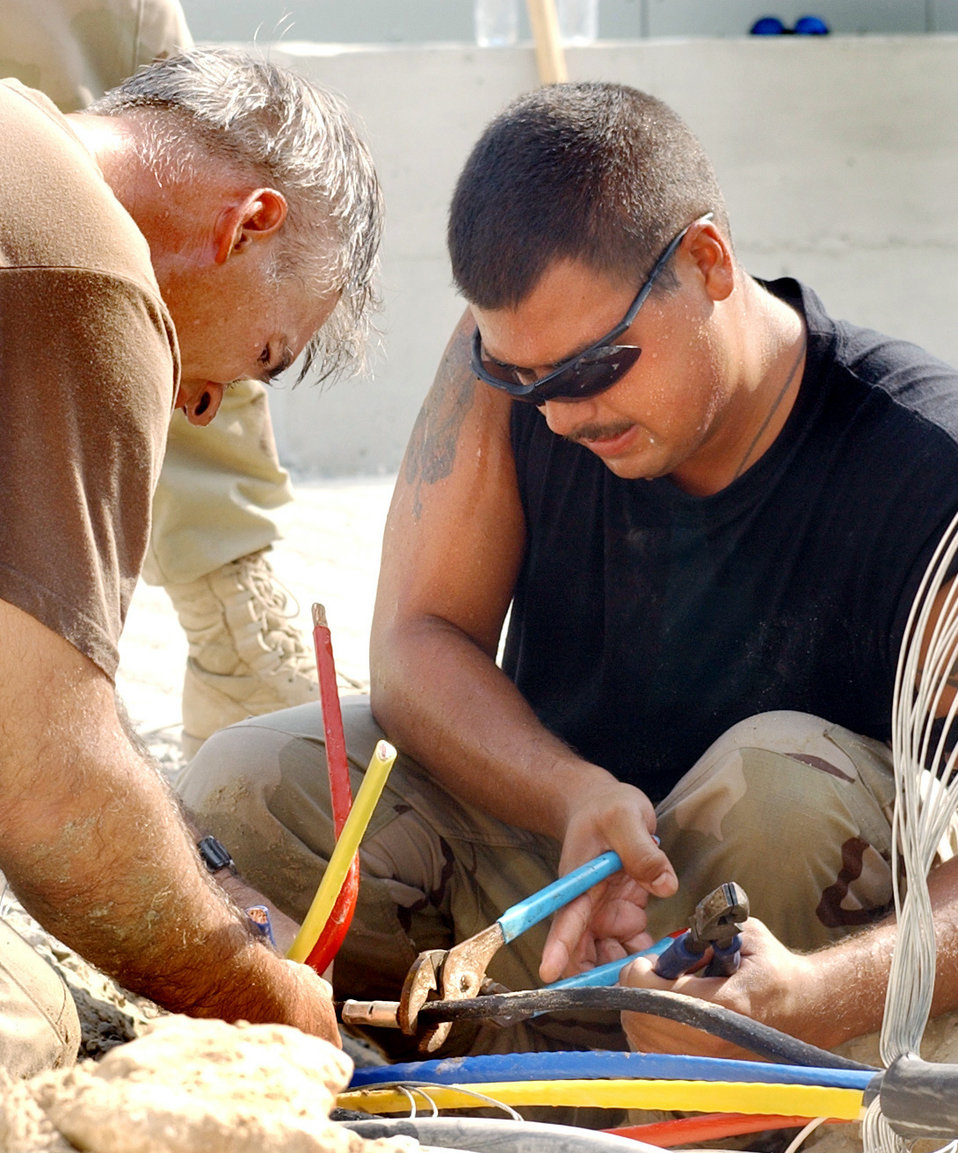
Upgrades

OPERATION ENDURING FREEDOM -- Tech. Sgt. Terry Zarazee (left) and Airman 1st Class Trevor Jones splice electrical cables at a forward-deployed location in Southwest Asia. The work is part of an upgrade of the electrical system at the base. Both airmen are assigned to the 380th Civil Engineer Squadron. They are deployed from Dyess Air Force Base, Texas.